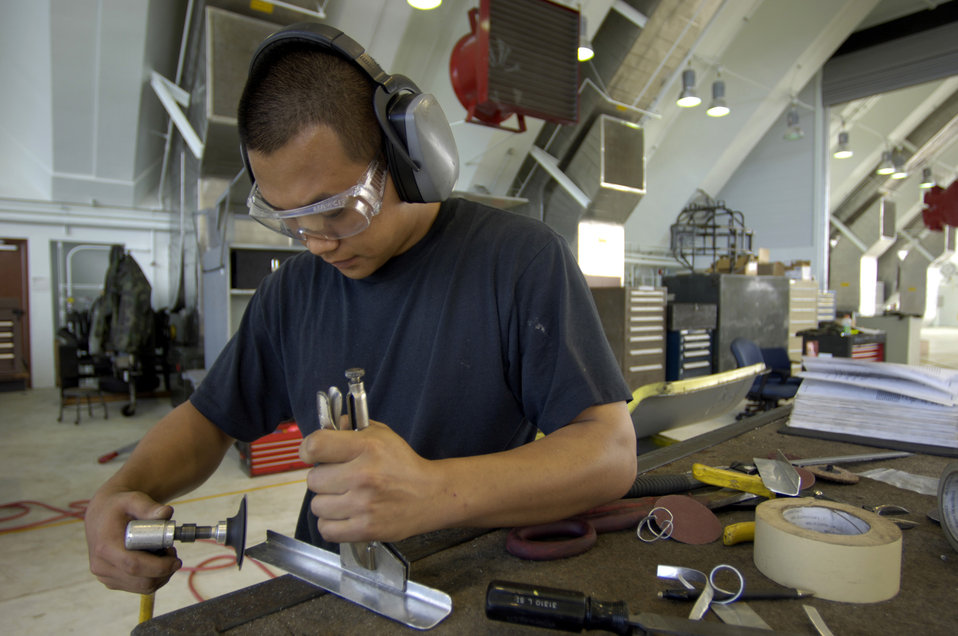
Growing mission

ANDERSEN AIR FORCE BASE, Guam -- Senior Airman Sang Lee fabricates a replacement part for a B-52 Stratofortress at a hangar here. Airman Lee is deployed from the 2nd Maintenance Squadron at Barksdale Air Force Base, La.